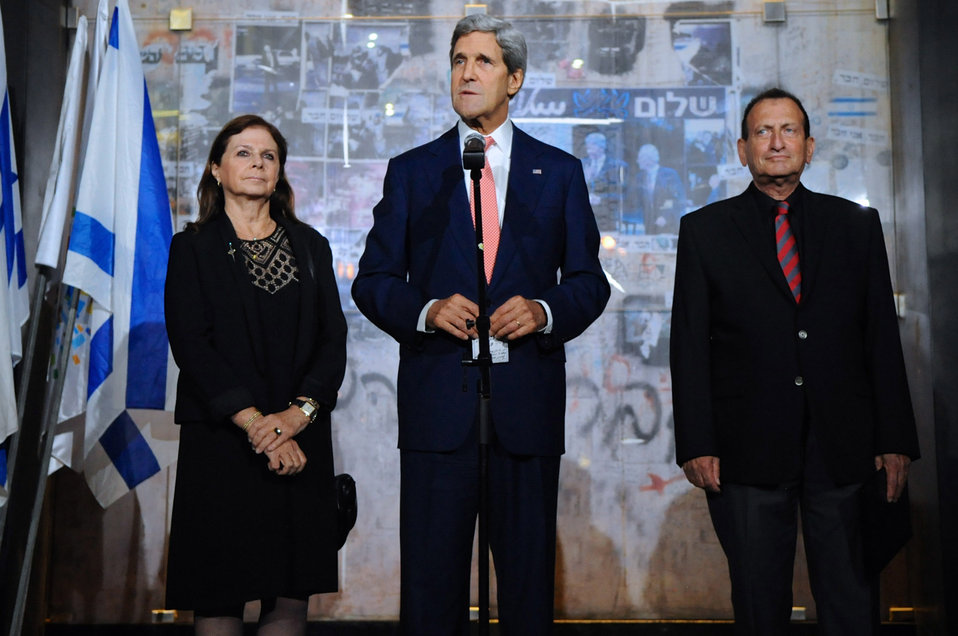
Secretary Kerry Speaks at Yitzhak Rabin's Assassination Site

U.S. Secretary of State John Kerry, flanked by Yitzhak Rabin's daughter Dalia and Tel Aviv Mayor Ron Huldai, speaks after laying a wreath at the site where the former Israeli Prime Minister was assassinated in 1995, during a stop in Tel Aviv, Israel, on November 5, 2013.